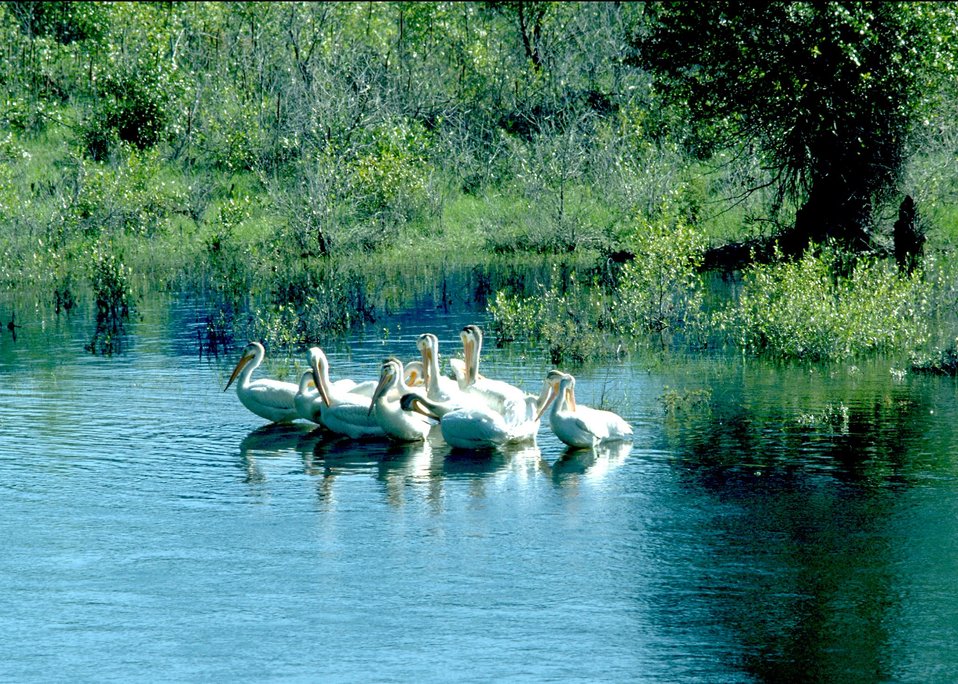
Pelicans on Holter Lake